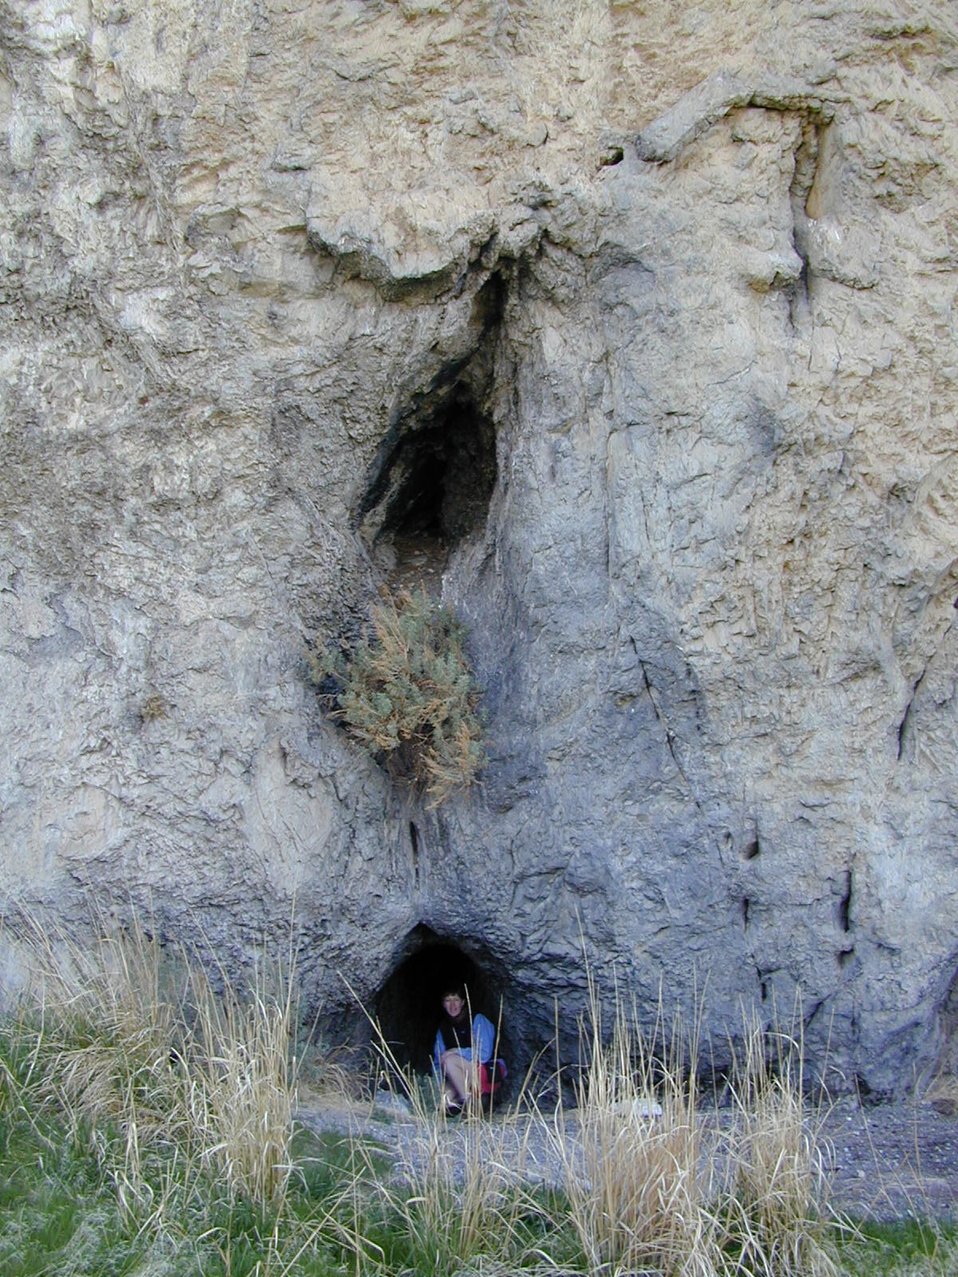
Bison and Veratic Rock Shelters Birch Creek Valley Idaho Falls Field Office USRD Upper Snake River District